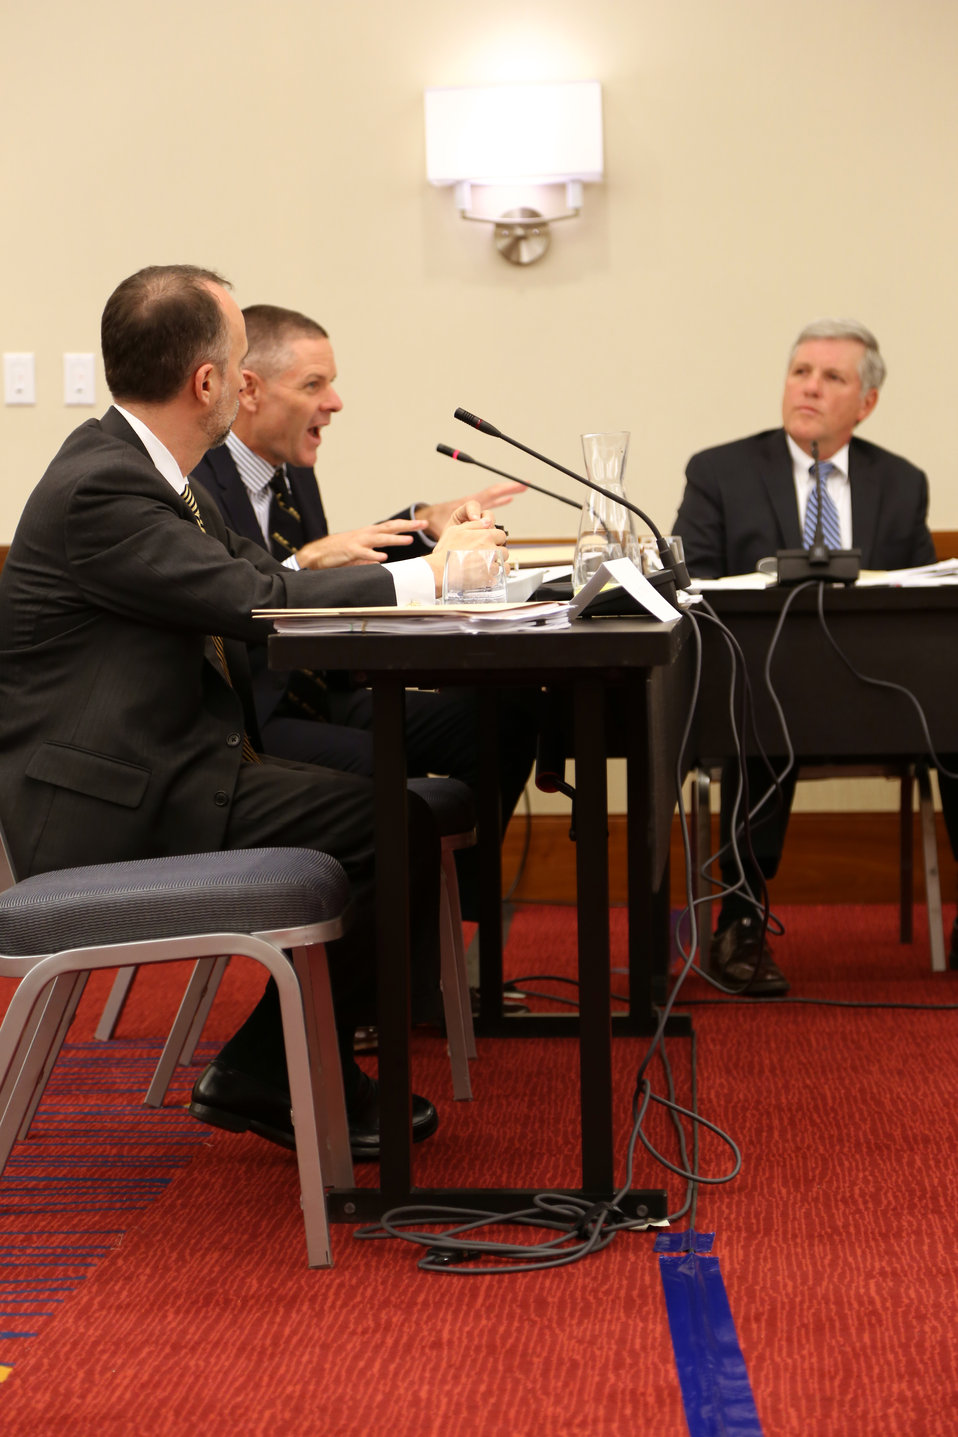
Wildlife Trafficking Advisory Council Meeting March 20, 2014